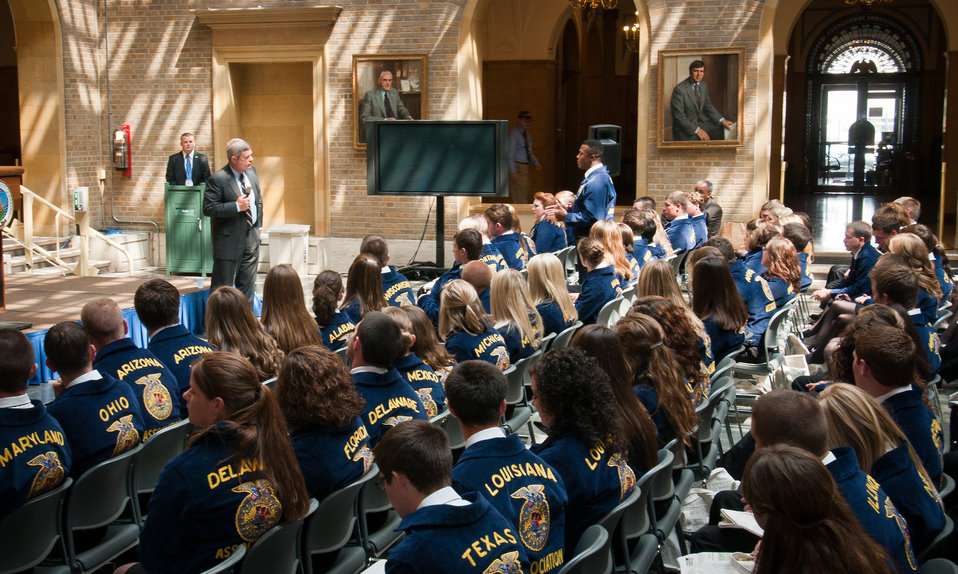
Agriculture Secretary Tom Vilsack speaks with the National Future Farmers of America (FFA) leadership at the U.S. Department of Agriculture in Washington, DC, on Thursday, July 28, 2011.